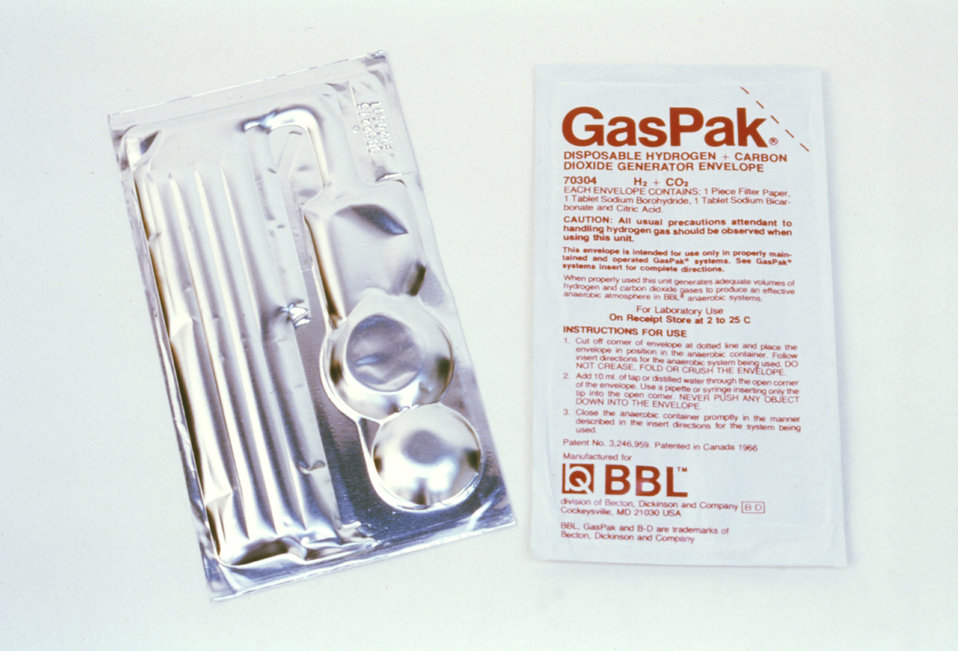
This 1980 image is a frontal and rear view of a BBL� GasPak generator.